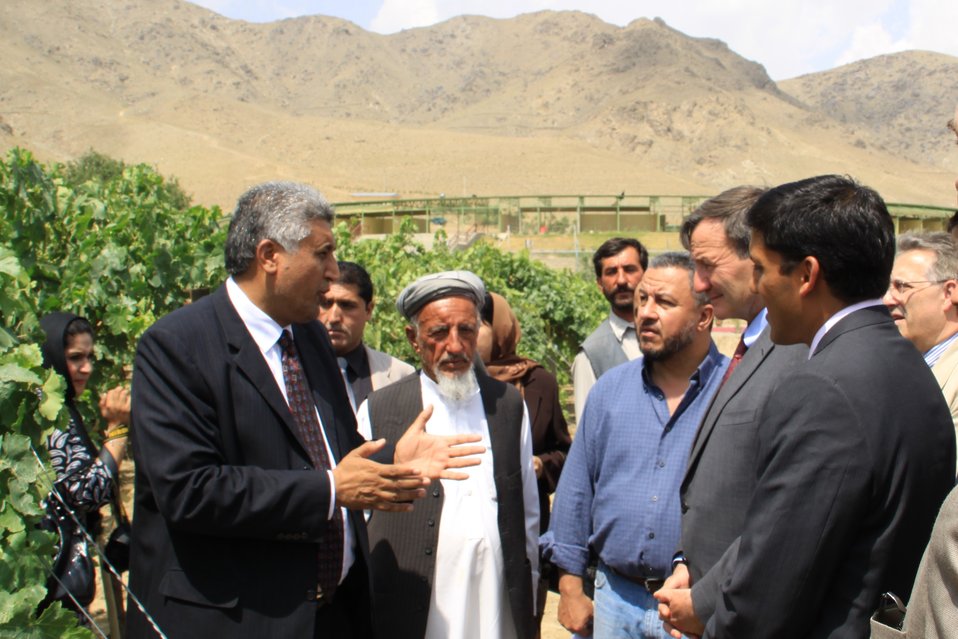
Badam Bagh Farm